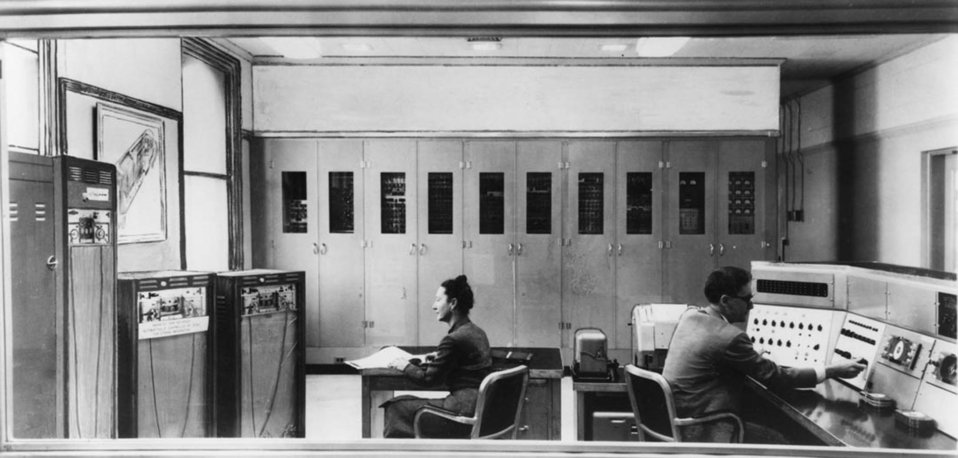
Fifitieth Anniversary of First Digital Image Marked

The room-sized Standards Eastern Automatic Computer (SEAC) was used to create the first scanned image.